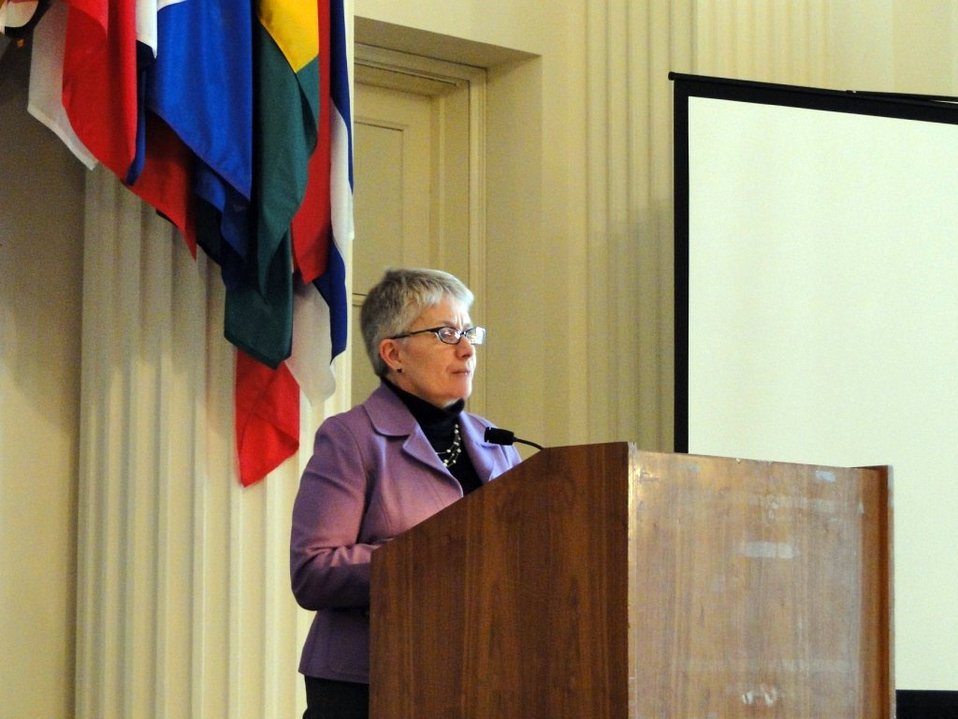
Assistant Secretary Dr. Jones Delivers Remarks

Assistant Secretary of State for Oceans and International Environmental and Scientific Affairs Dr. Kerri-Ann Jones delivers remarks at the CAFTA-DR Environmental Affairs Council (EAC) meeting in Washington, D.C., on January 27, 2011.